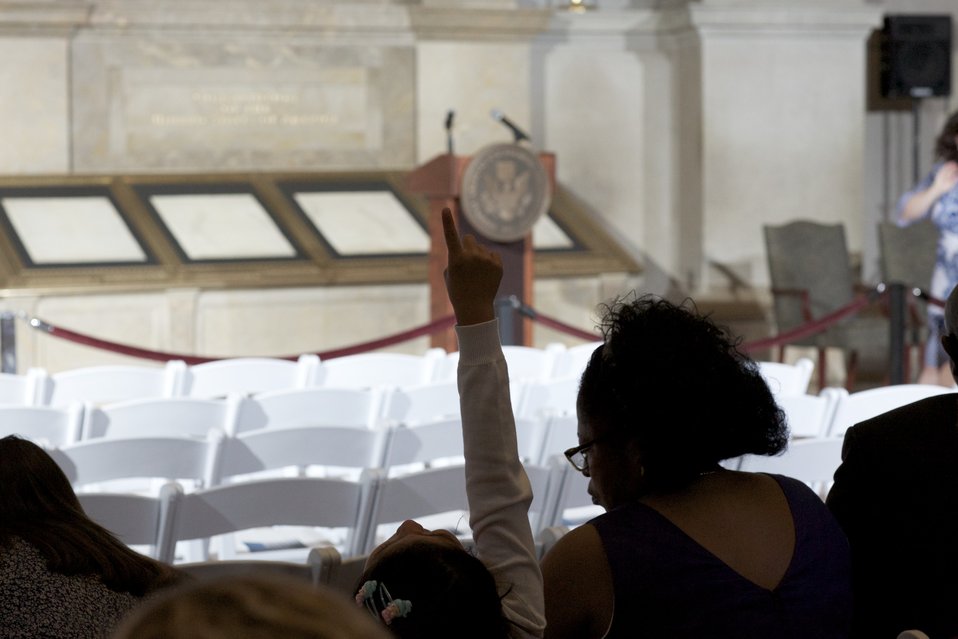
Naturalization Ceremony with Michelle Obama